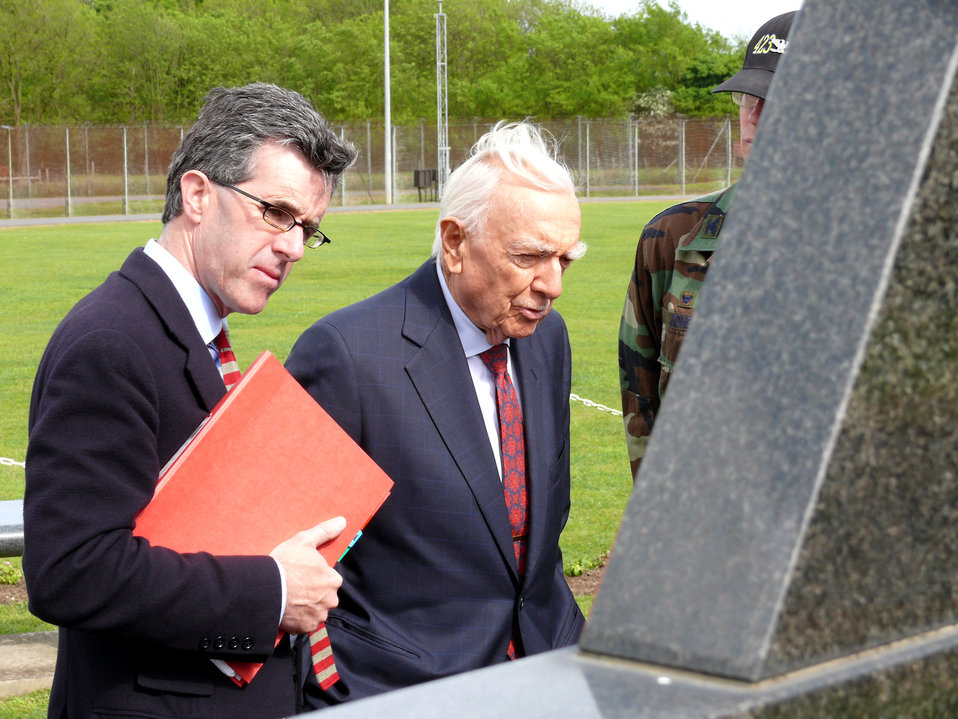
Legendary journalist visits England base

Journalist Walter Cronkite (center) looks at the 303rd Bomb Group memorial along with Alastair Layzell May 29 at Royal Air Force Molesworth, England. Mr. Layzell is a Colonial Pictures producer. The two are working on a special that will feature Capt. Donald Stockton and the 303rd Bomb Group.